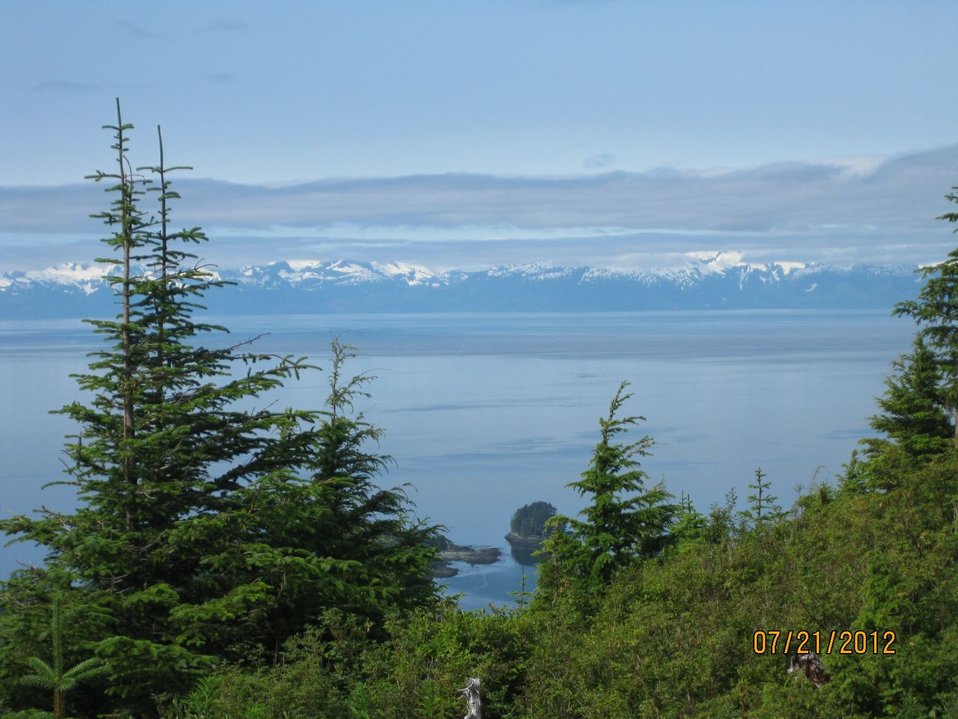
Kake, Alaska landscape

February 21, 2013 - Renewable energy development has the potential to reduce Kake's dependence on costly imported fossil fuel while preserving the pristine environment that is so vital to the community's way of life.